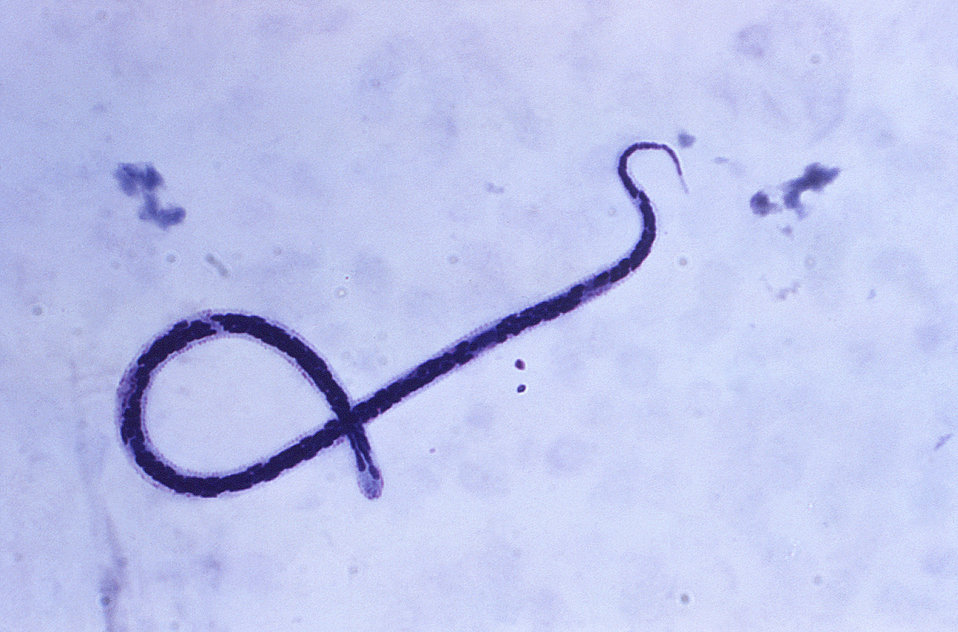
Under a relatively high magnification of 630X; this Giemsa-stained photomicrograph revealed a detailed view of a single Mansonella ozzardi microfilaria.Laboratory Diagnosis: